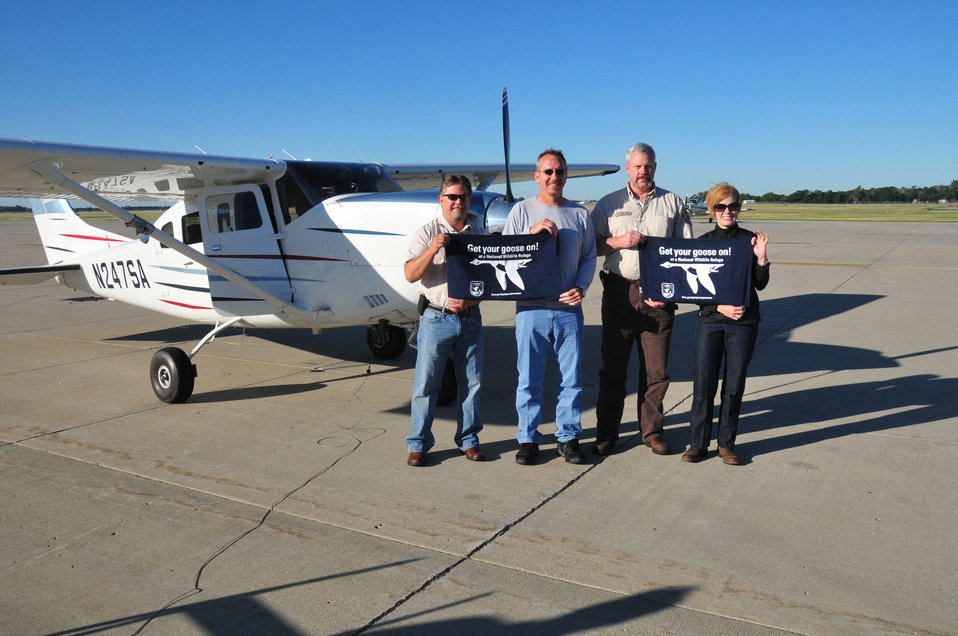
Get Your Goose On!

The national meeting for regional chiefs of the National Wildlife Refuge System is held three times a year in different locations around the country. This 2012 meeting took place in McPherson County, South Dakota, and focused on the Dakota Grassland Conservation Area.

This photo was taken on the Wade Weiszharr and Family Ranch, which contains perpetual U.S. Fish and Widlife grassland and wetland easements. This site is also located in the heart of Prairie Pothole Region, making it extremely productive migratory bird habitat and a great place to “Get your goose on!”

In this photo Aaron Archibeque, Jeff Ruppert, Sean Bayless, and Serena Selboe 'get their goose on' next to the region's Cessna 206! This aircraft is primarily used to monitor grassland and wetland easements in the area.